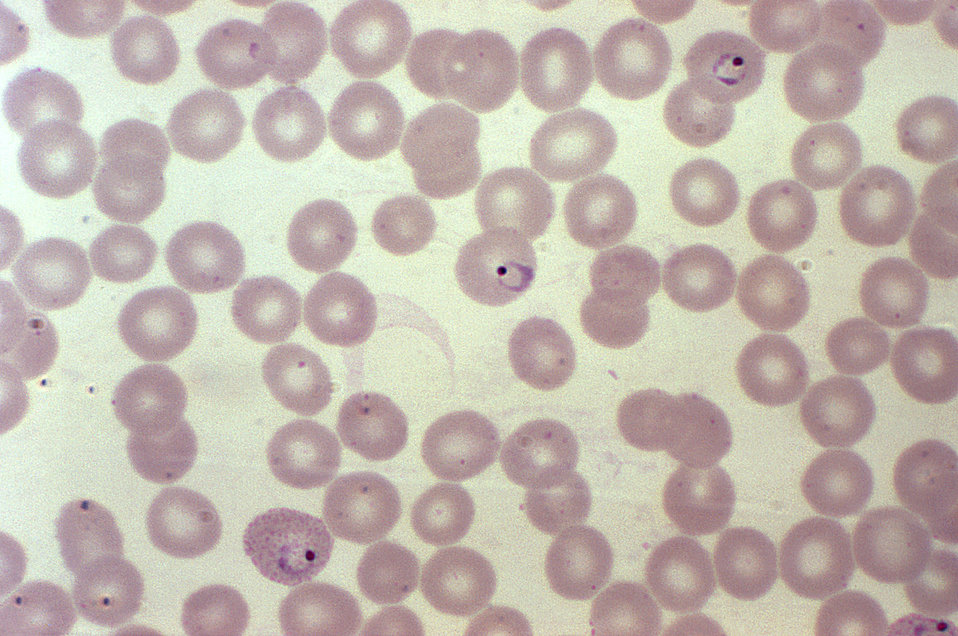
A photomicrograph of a blood smear showing erythrocytes containing developing P. vivax parasites, magnified 1000X.